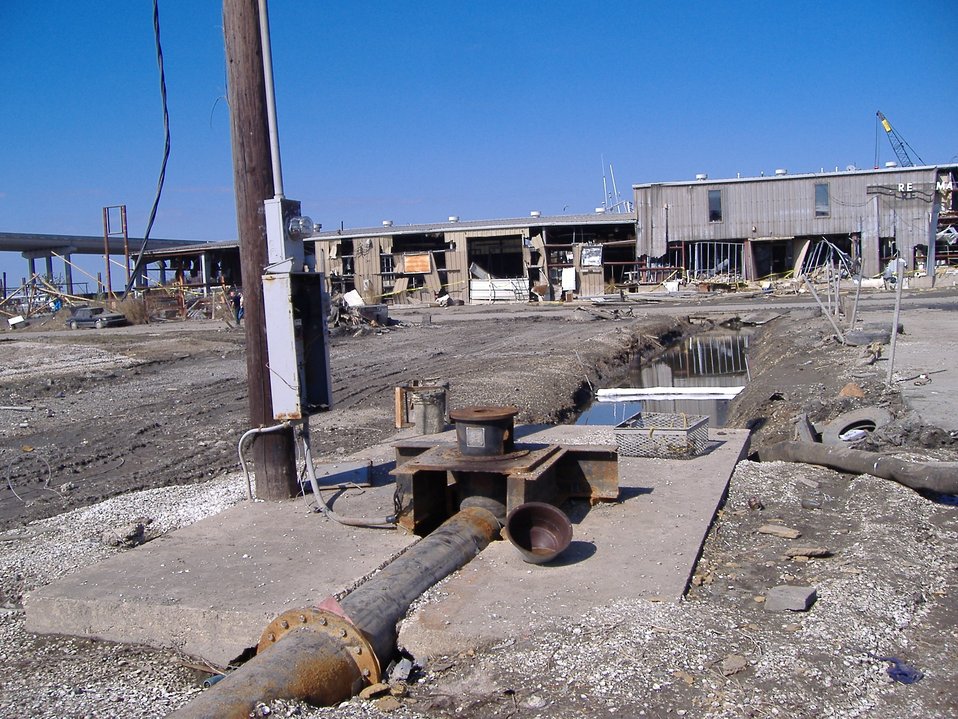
The aftermath of Katrina.